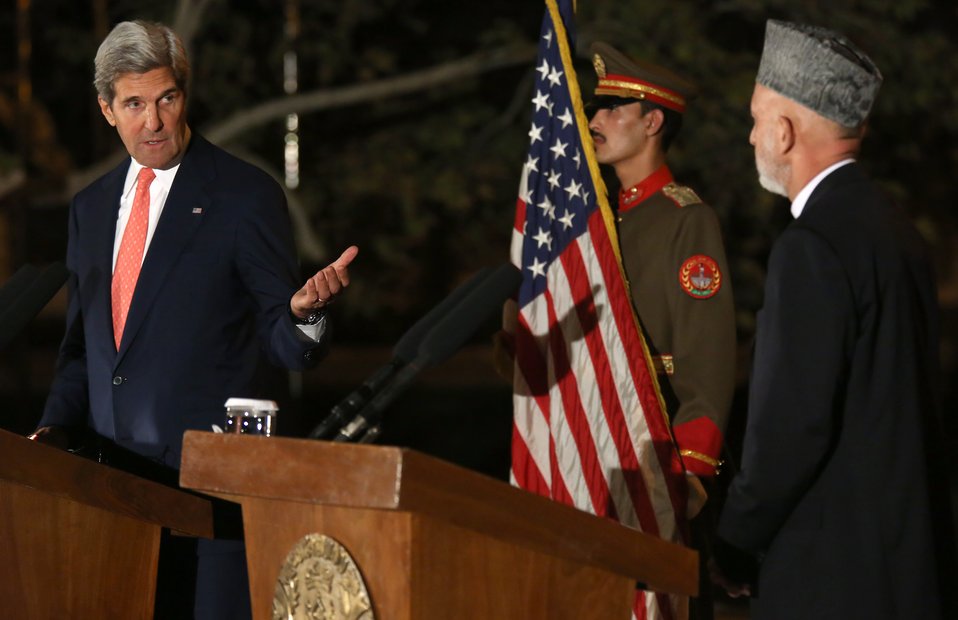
Secretary Kerry Discusses Bilateral Security Agreement With Afghanistan

U.S. Secretary of State John Kerry holds a press conference with Afghan President Hamid Karzai at the Presidential Palace on October 12, 2013, in Kabul, Afghanistan. You can view Secretary Kerry's remarks here: www.state.gov/secretary/remarks/2013/10/215358.htm.